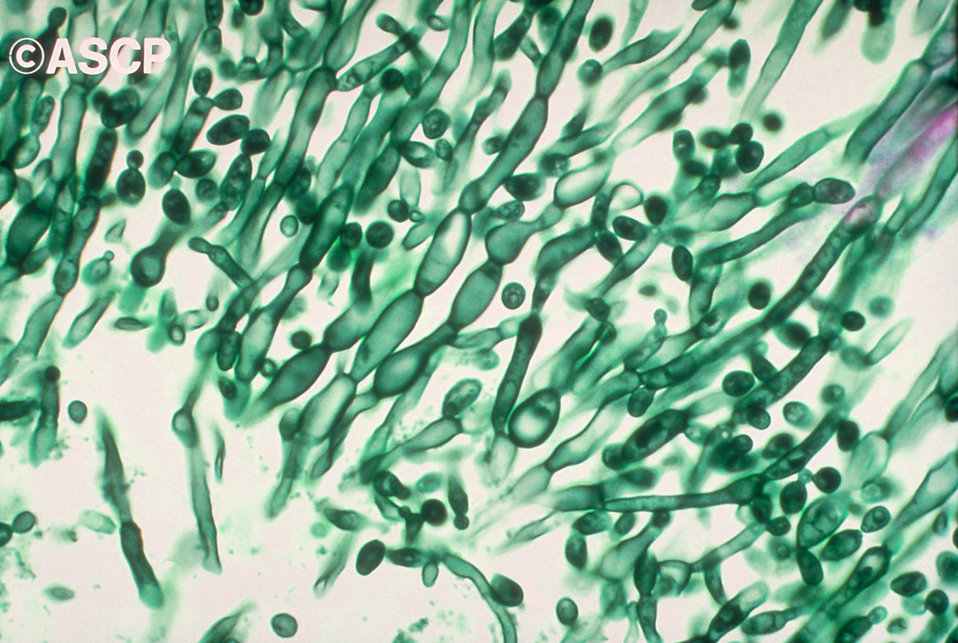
Histopathology of Candida albicans infection. Methenamine silver stain.